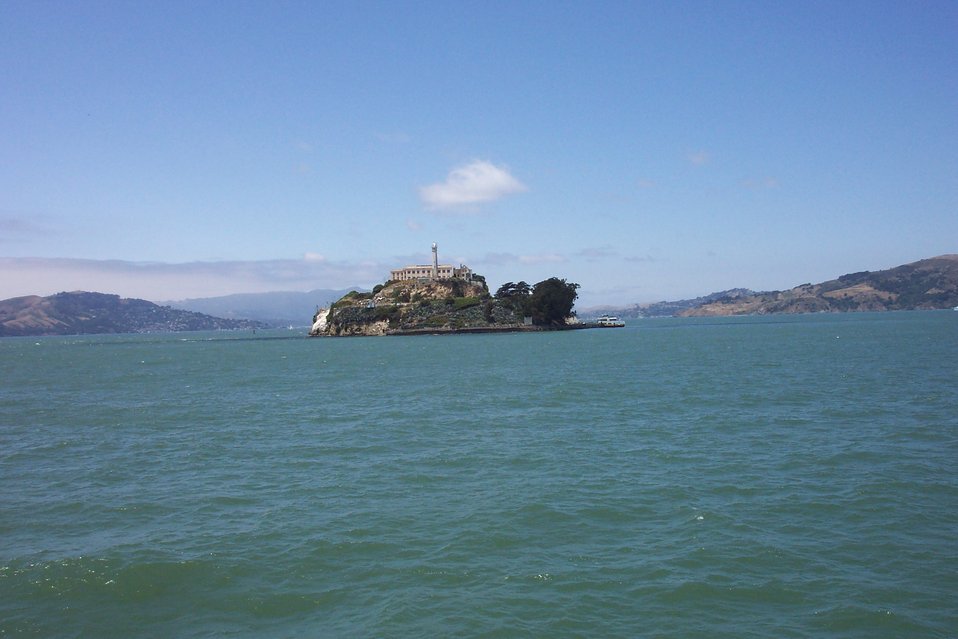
Alcatraz, sometimes called 'The Rock.'